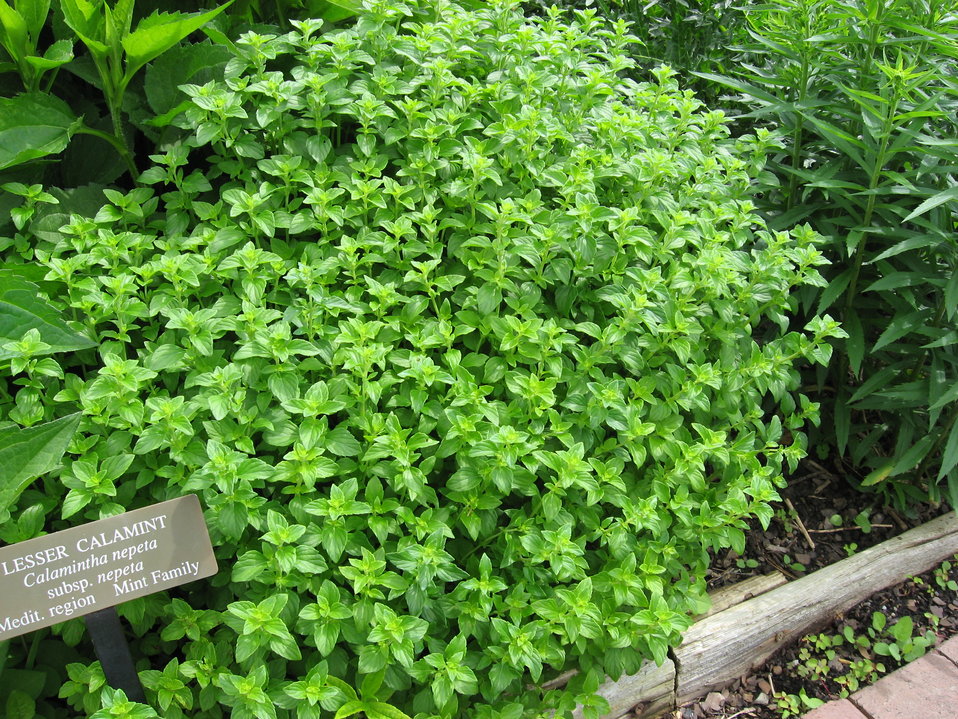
A picture of Calamintha nepeta subsp. nepeta.